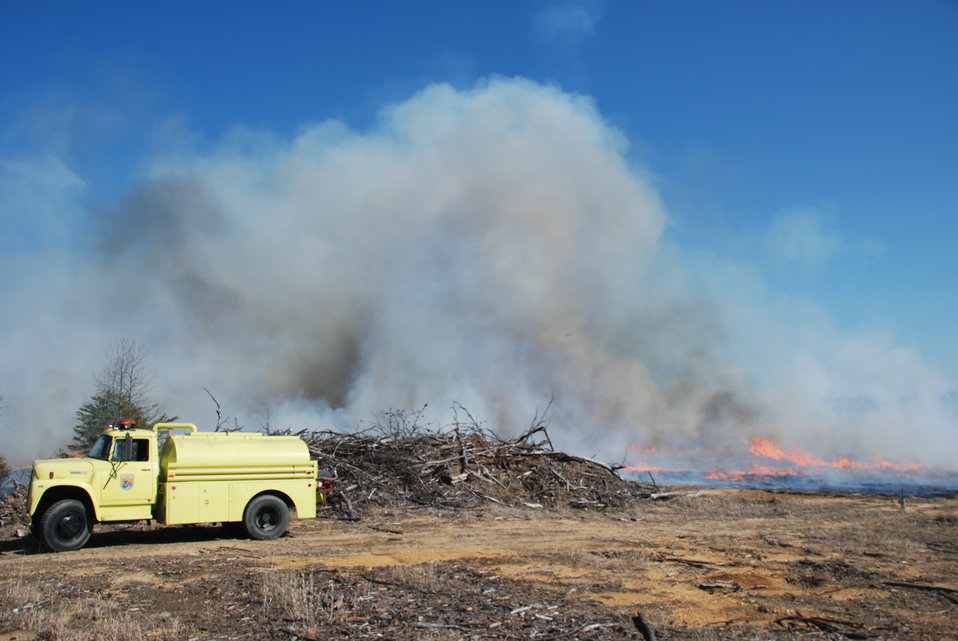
Patuxent's Water Tender in Action

Laurel, Maryland, April 14, 2012: A newly refurbished water tender at Patuxent Research Refuge stands ready at a controlled burn. The burn at the refuge was to maintain native grasslands, remove woody vegetation, and control invasive species such as Korean Lespedeza.
The burn, at Patuxent Research Refuge, was to maintain native grasslands, remove woody vegetation, and control invasive species such as Korean Lespedeza.